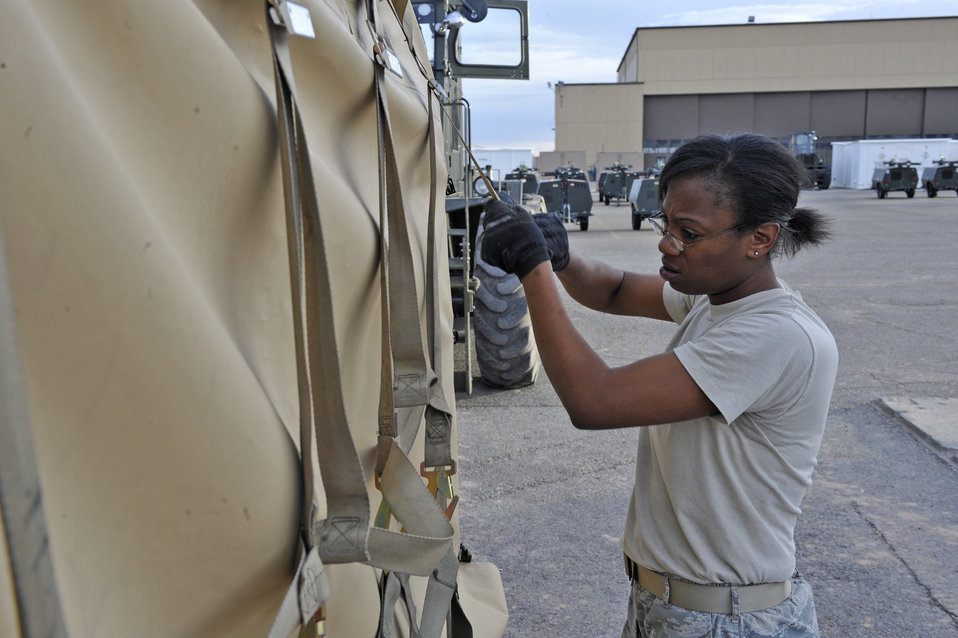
Holloman prepares to support Operation United Response

Senior Airman Breanna Fuller straps down a 1500 reverse osmosis water purification unit, or ROWPU, preparing it for transportation, Jan. 17, 2010, at Holloman Air Force Base, N.M. The base is preparing tents, generators, air conditioning units, ROWPUs and personnel to send to Haiti after that country was rocked by a magnitude 7 earthquake Jan. 12, leaving thousands dead and even more homeless. Airman Fuller is from the 49th Materiel Maintenance Group.